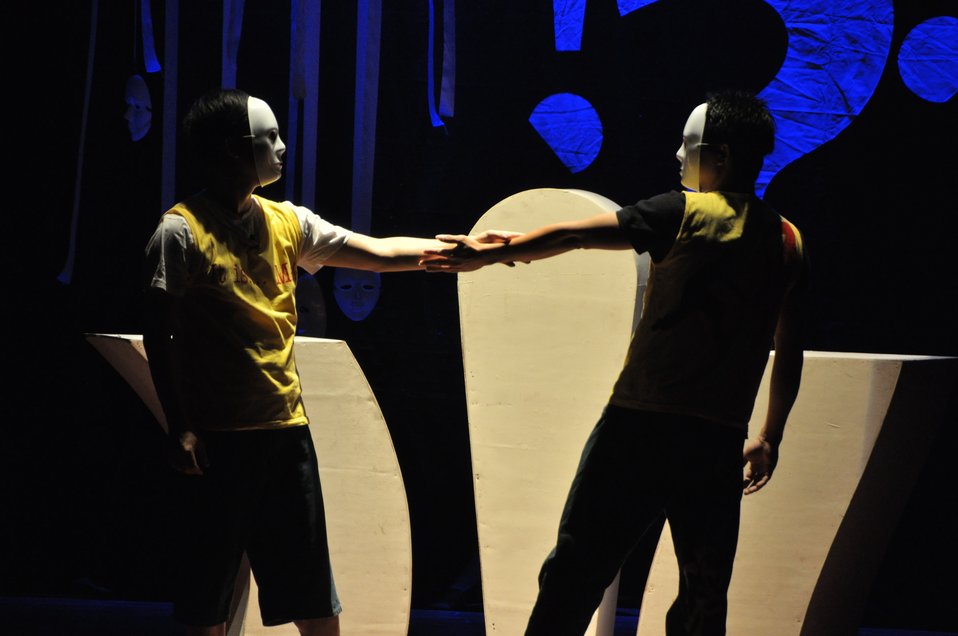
PEPFAR Musical Questions and Exclamations

Hanoi, May 17, 2013